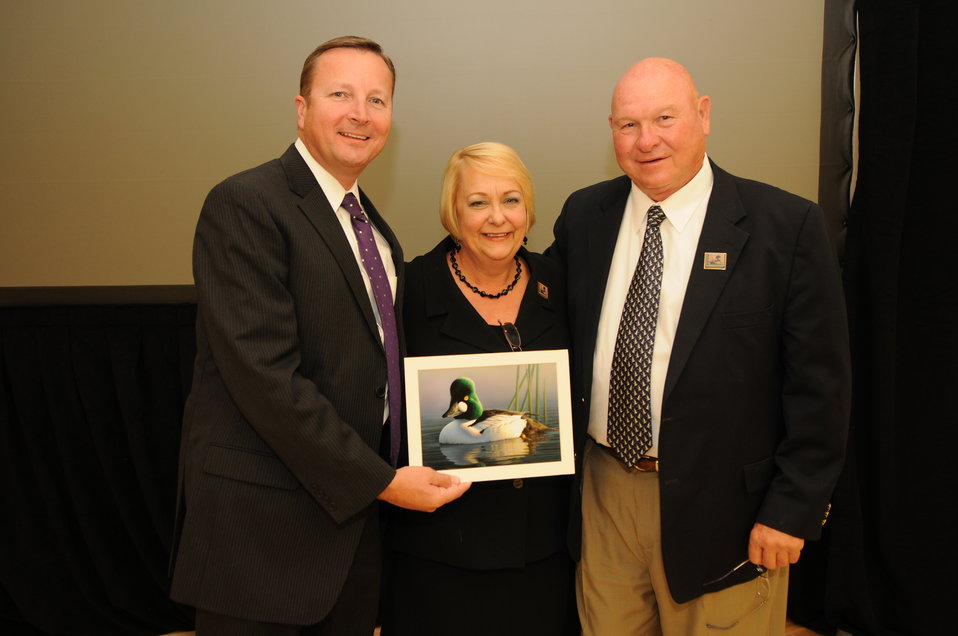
Everyone Loves a Winner

The U.S. Fish & Wildlife Service sponsored the 2012 Federal Duck Stamp Art Contest September 28 and 29 in Ogden, Utah, at Weber State University. A panel of five judges was responsible for choosing the art work used to design the 2013-2014 Migratory Bird Hunting and Conservation Stamp.